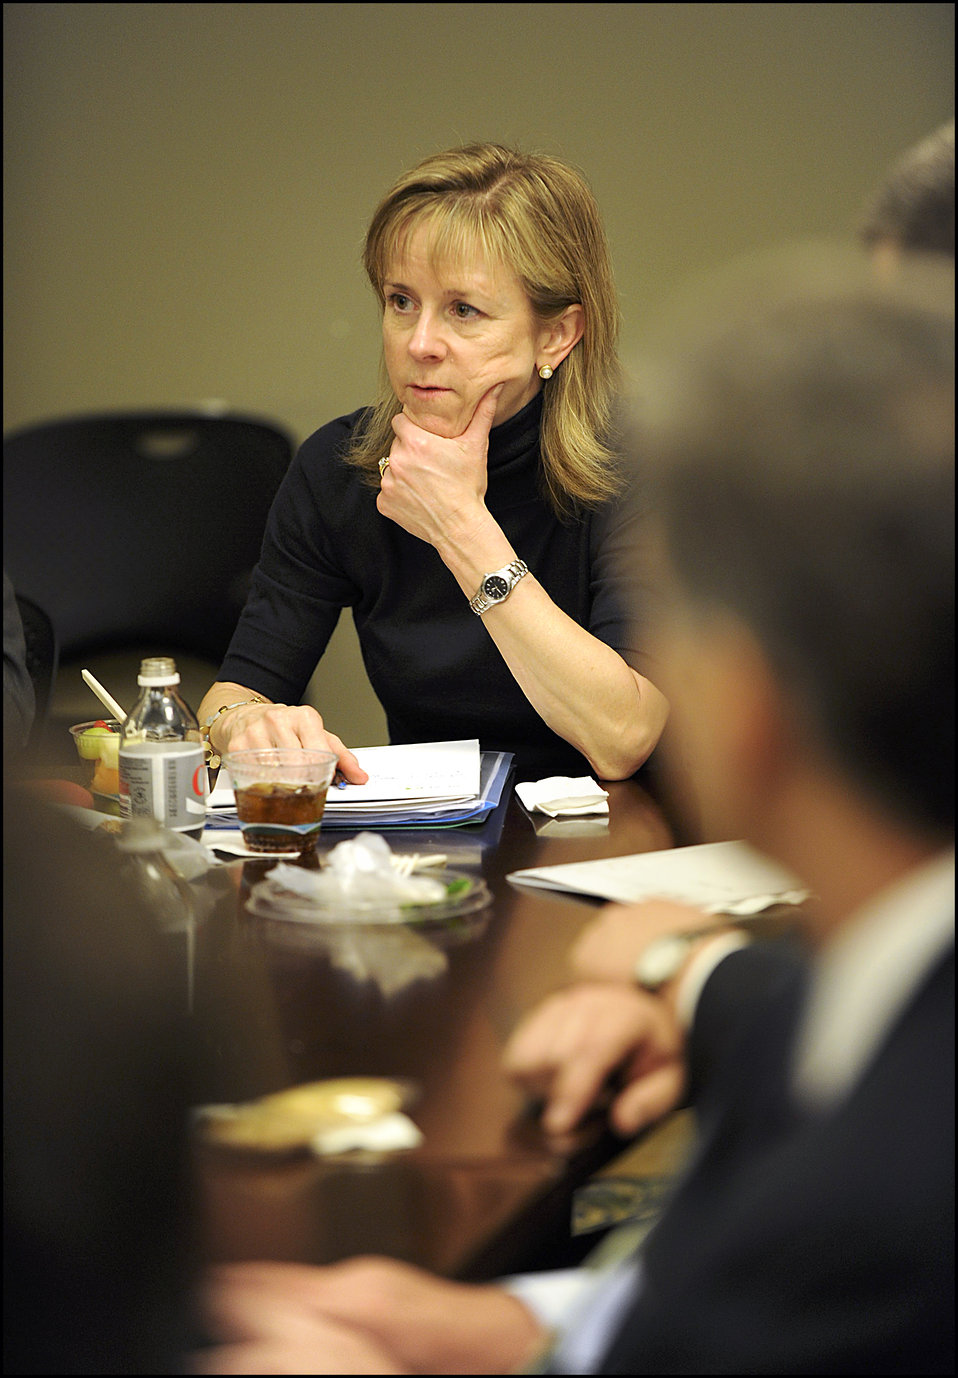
Access to Capital Conference

Panelist Kate Mitchell, Managing Director at Scale Venture Partners and Chairman of the National Venture Capital Association, participated in a breakout session on Financing Small Cap companies: IPOs, Credit, and Alternative Liquidity Platforms,' hosted by Under Secretary of the Treasury for Jeffrey Goldstein.